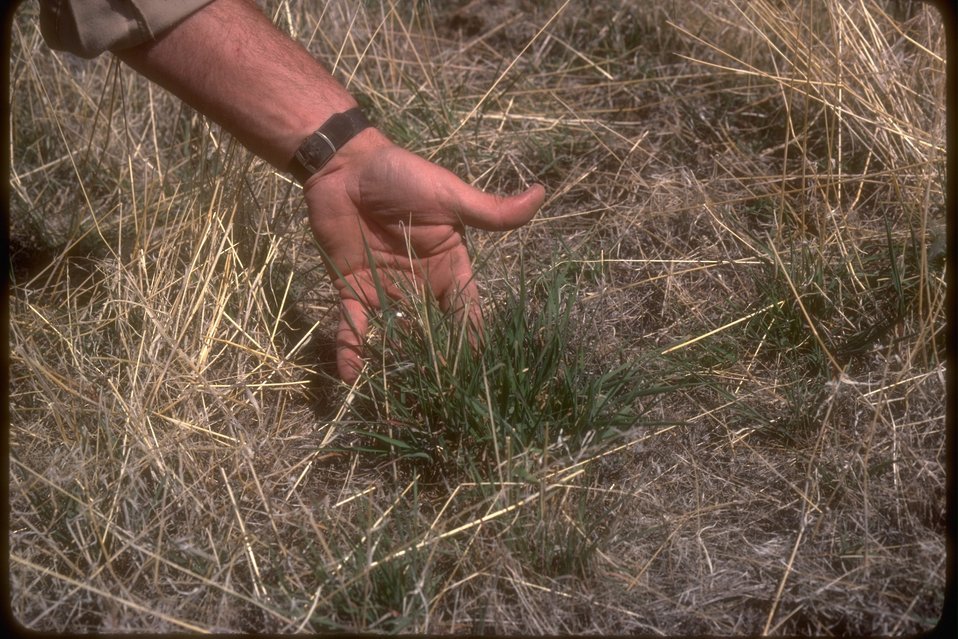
Monitoring the new growth.